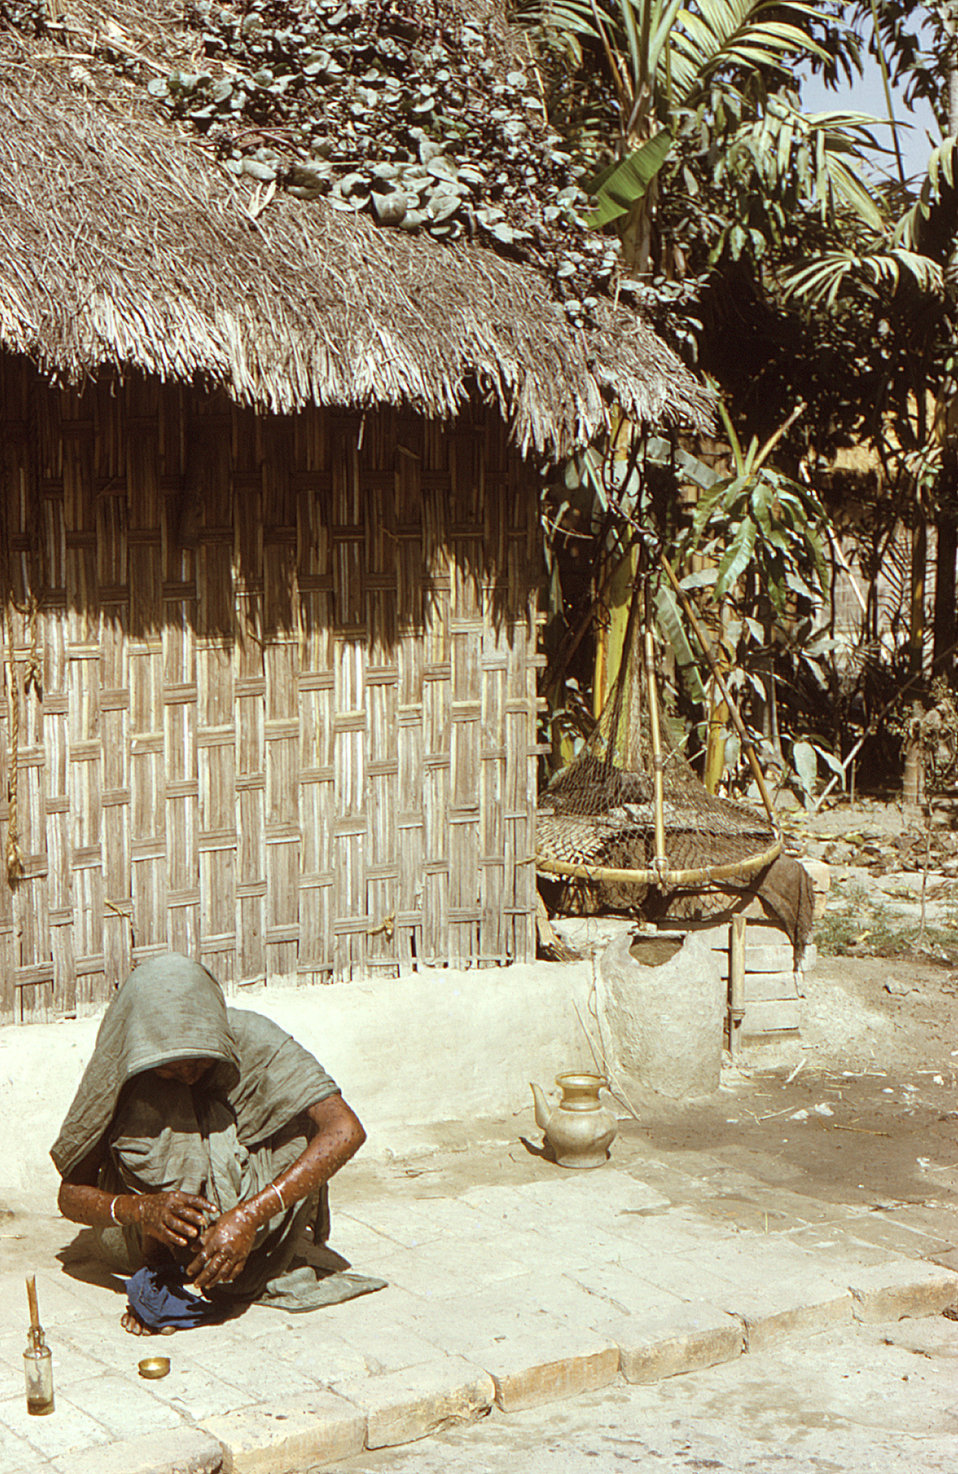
This 1974 image depicted an adult female Bangladesh villager (see PHIL 10655) who'd contracted smallpox. Suffering from its ravages, she displayed the classic maculopapular rash covering her arms, legs, and face with pustules, which were exposed from beneath a body garment.